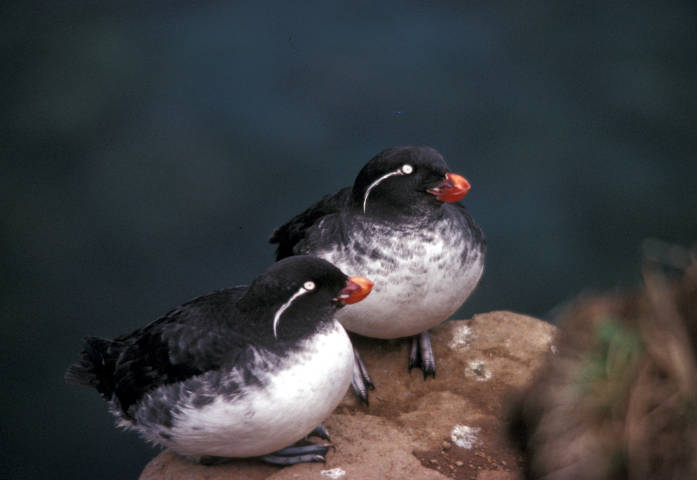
parakeet auklets

Alaska Maritime National Wildlife Refuge